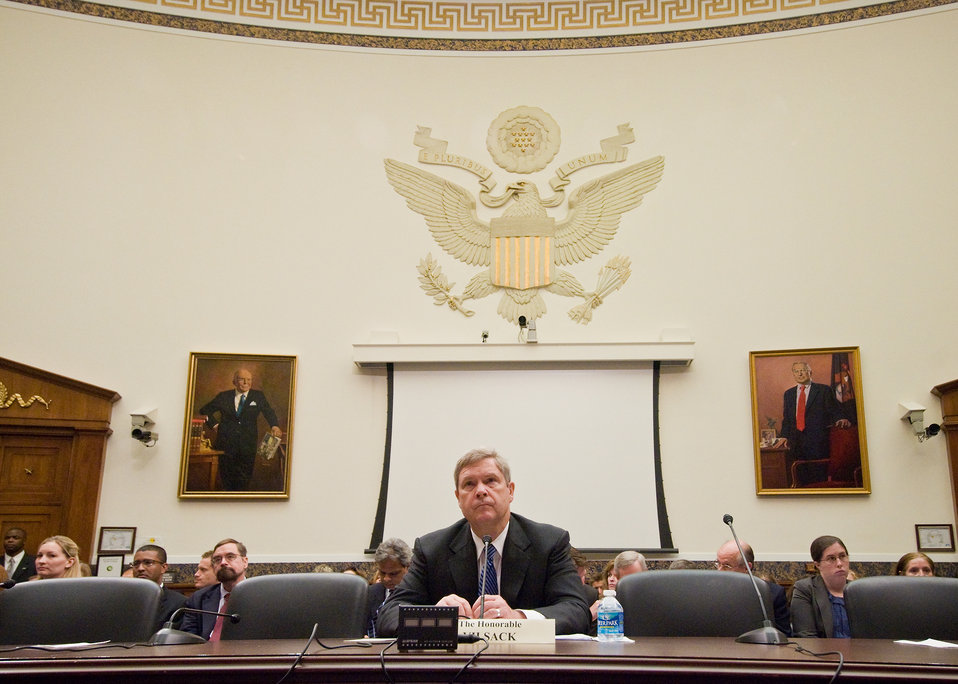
Agriculture Secretary Tom Vilsack attended a hearing of the House Committee on Education and Labor on “H.R.5504, Improving Nutrition for America’s Children Act,” in the Rayburn House Office Building in Washington, D.C., Thursday, July 1. 2010. Secretary Vilsack spoke of the importance of nutrition to National security, military preparedness and education. USDA Photo 10di1427-03.